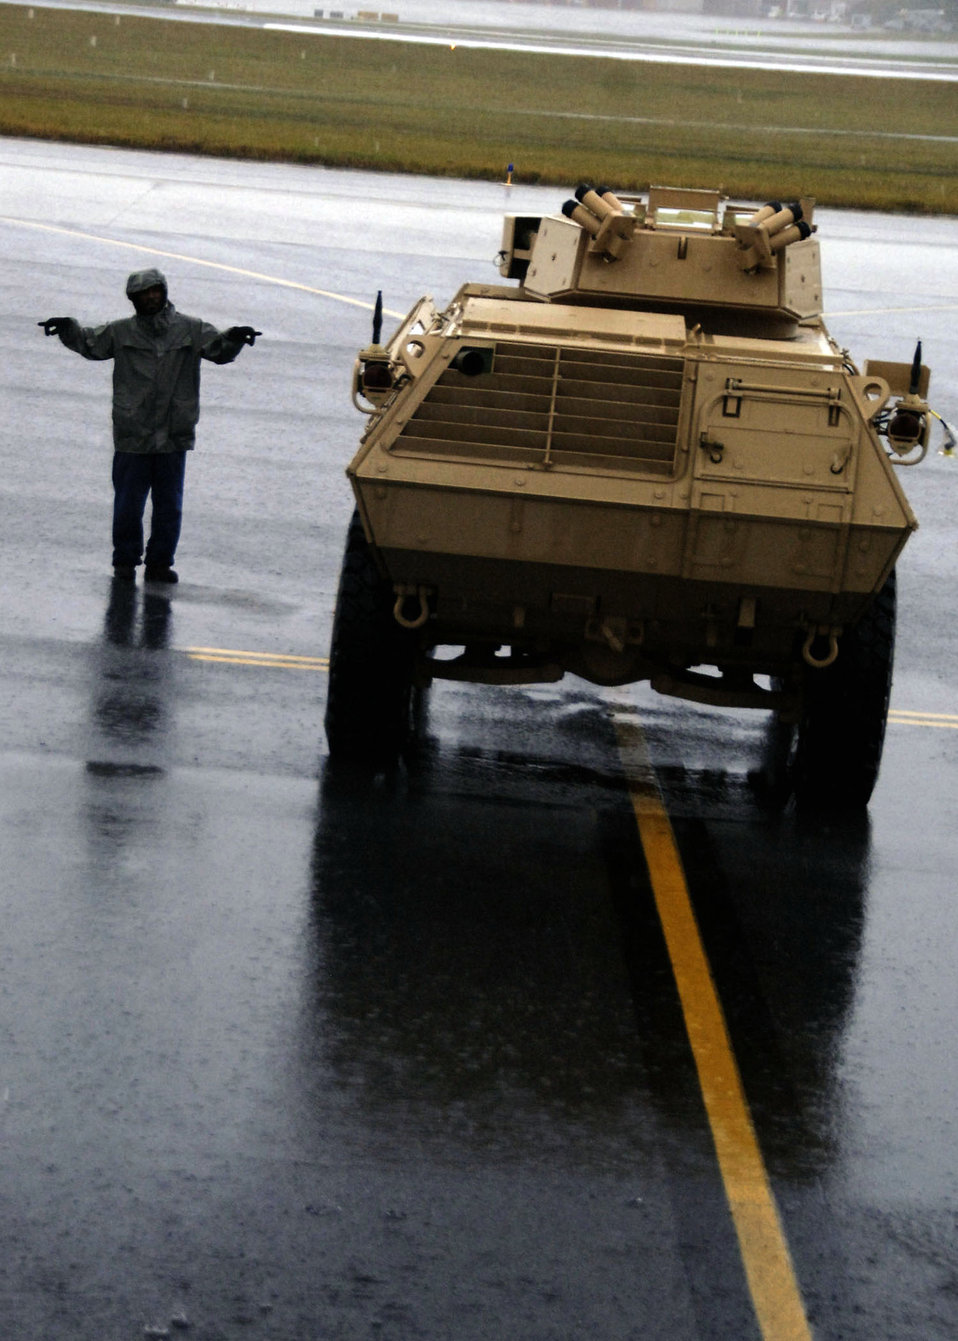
Charleston officials ship vehicles to support warfighters

Corrie Frazier guides an armored security vehicle toward the back of a C-17 Globemaster III Oct. 24 at Charleston Air Force Base, S.C. The ASV is a four-wheel-drive vehicle that provides ballistic protection to warfighters who are using them against various threats. Mr. Frazier is with the 437th Aerial Port Squadron.